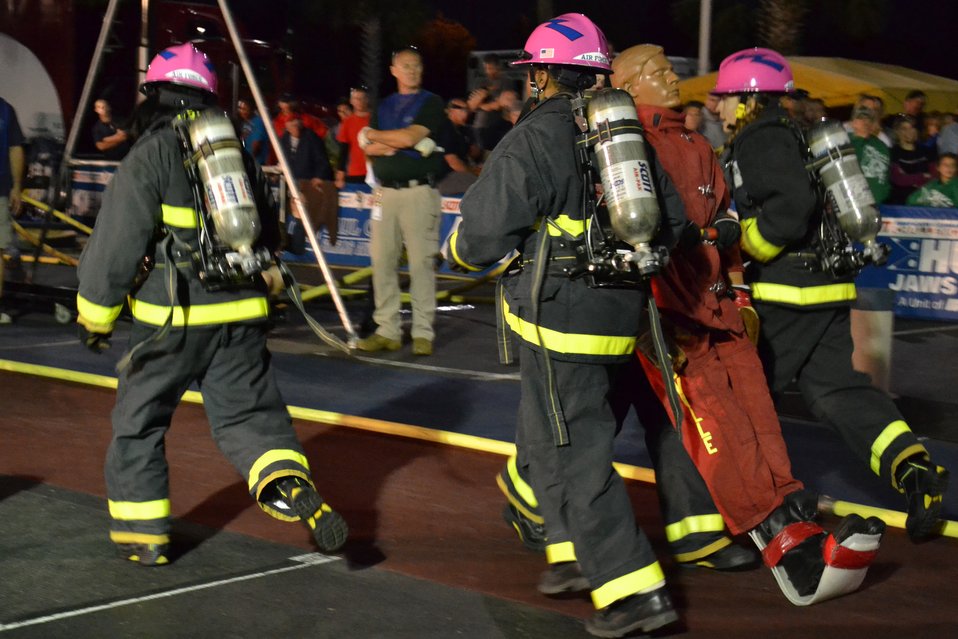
Academy firefighters win 3 world titles

Team Fire Fembots race to the finish as they compete in a relay firefighter event Nov. 13, 2010, at the 2010 Scott Firefighter Combat Challenge in Myrtle Beach, S.C. The Fire Fembots represent the Air Force Academy and won first place in the female division.